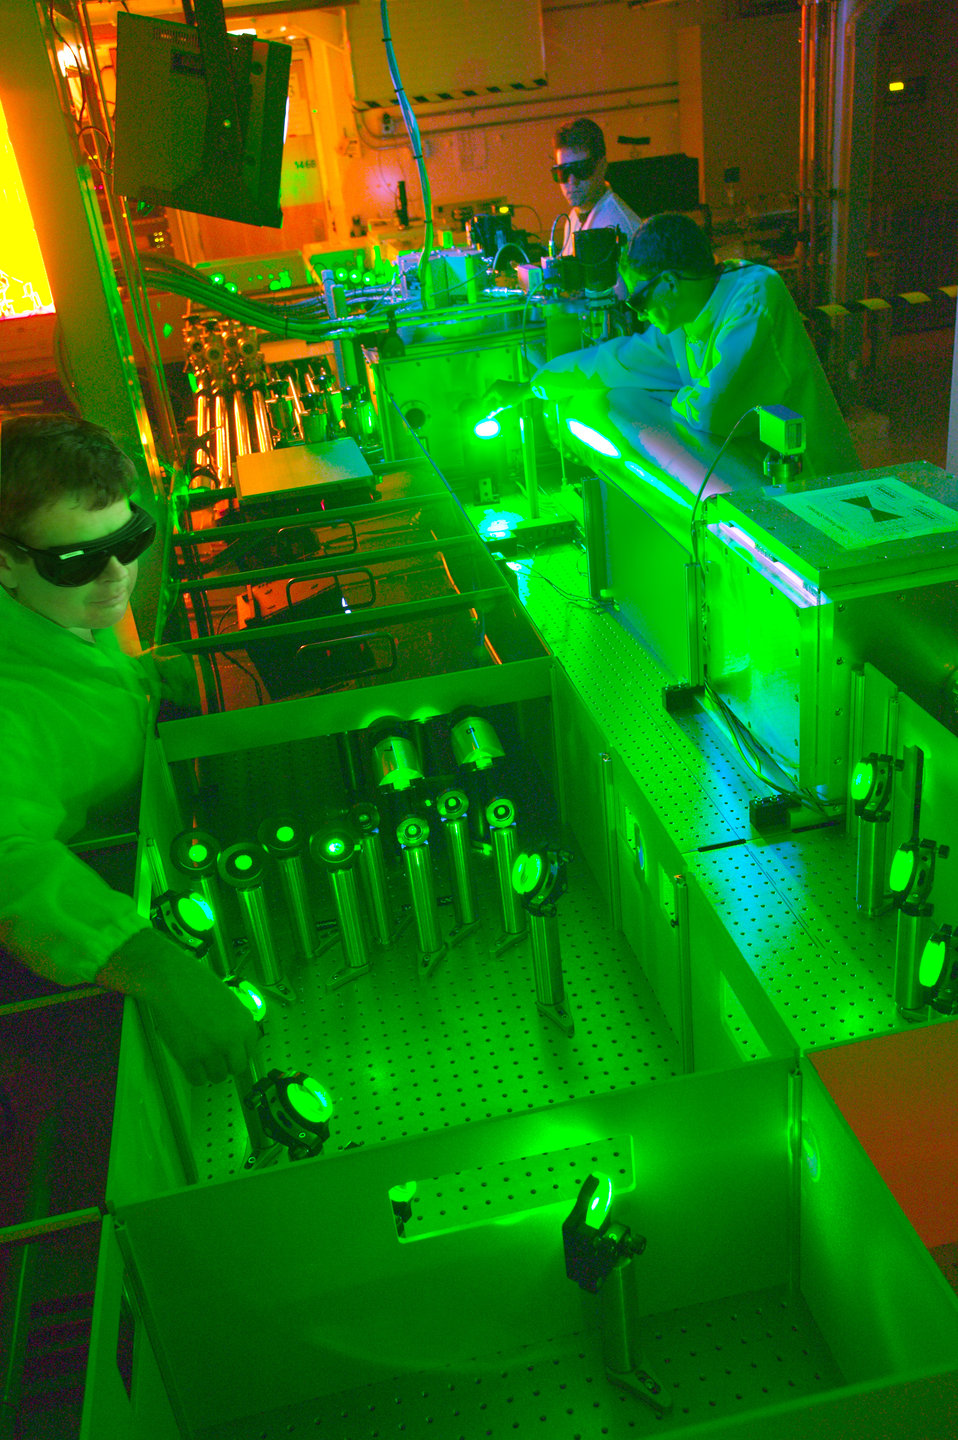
Lawrence Berkeley National Laboratory scientists working with a 40-terawatt laser.

Berkeley Lab scientists stunned the world in 2006 when they proved they could accelerate electrons to very high energies (1 GeV, or a billion electron volts) in a distance of centimeters rather than hundreds of meters. Using the same concepts, those scientists plan to take the project to the next level and build a laser-based accelerator capable of zapping electron beams to energies exceeding 10 GeV in a distance of just one meter.